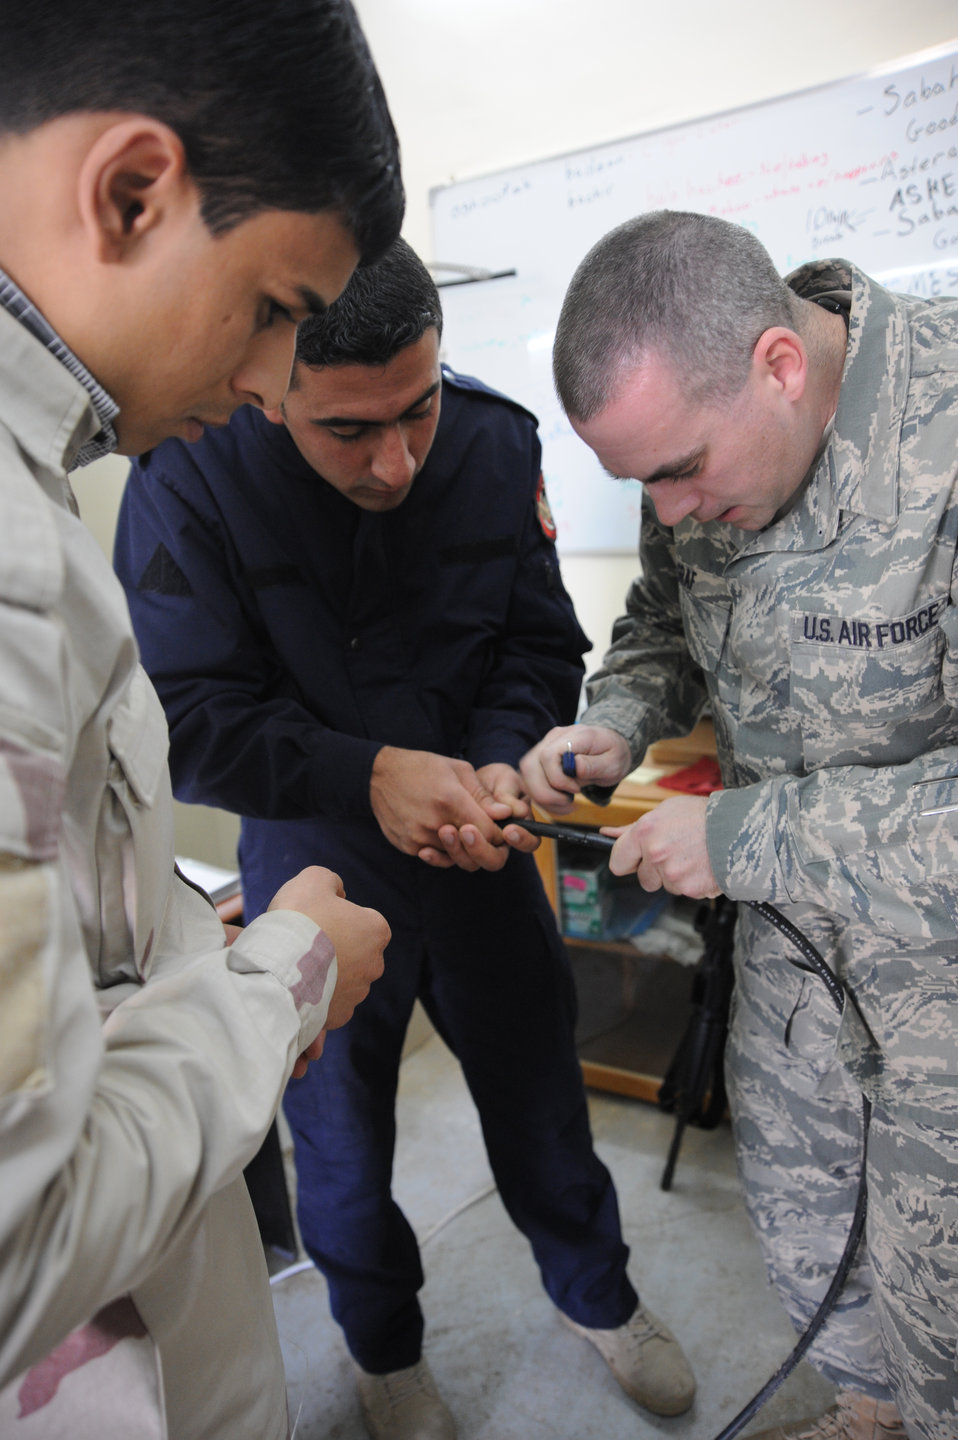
Fiber optics course

Staff Sgt. Gary Graf, an 821st Expeditionary Training Squadron cable and antenna maintenance instructor at Camp Taji, Iraq, demonstrates to some of his Iraqi students how to cut open a cable and separate the different wires during a fiber optics maintenance course Feb. 13, 2010. During the 42-day course, Iraqi military students learn about theories, splicing cable and the improved capabilities that fiber optics can bring. Sergeant Graf is deployed to the 821st ETS from Sheppard Air Force Base, Texas.